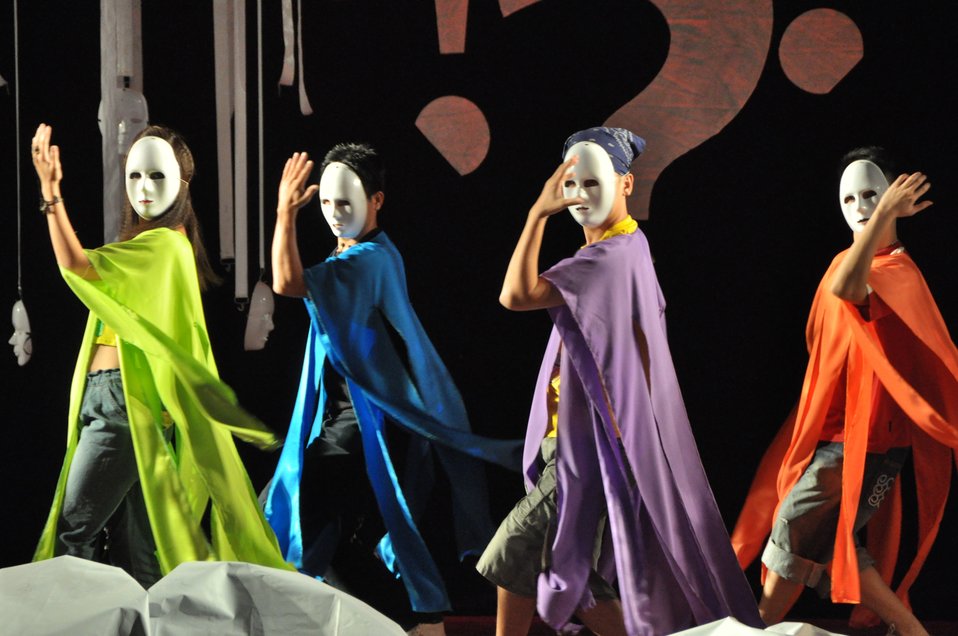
PEPFAR Musical Questions and Exclamations

Hanoi, May 17, 2013